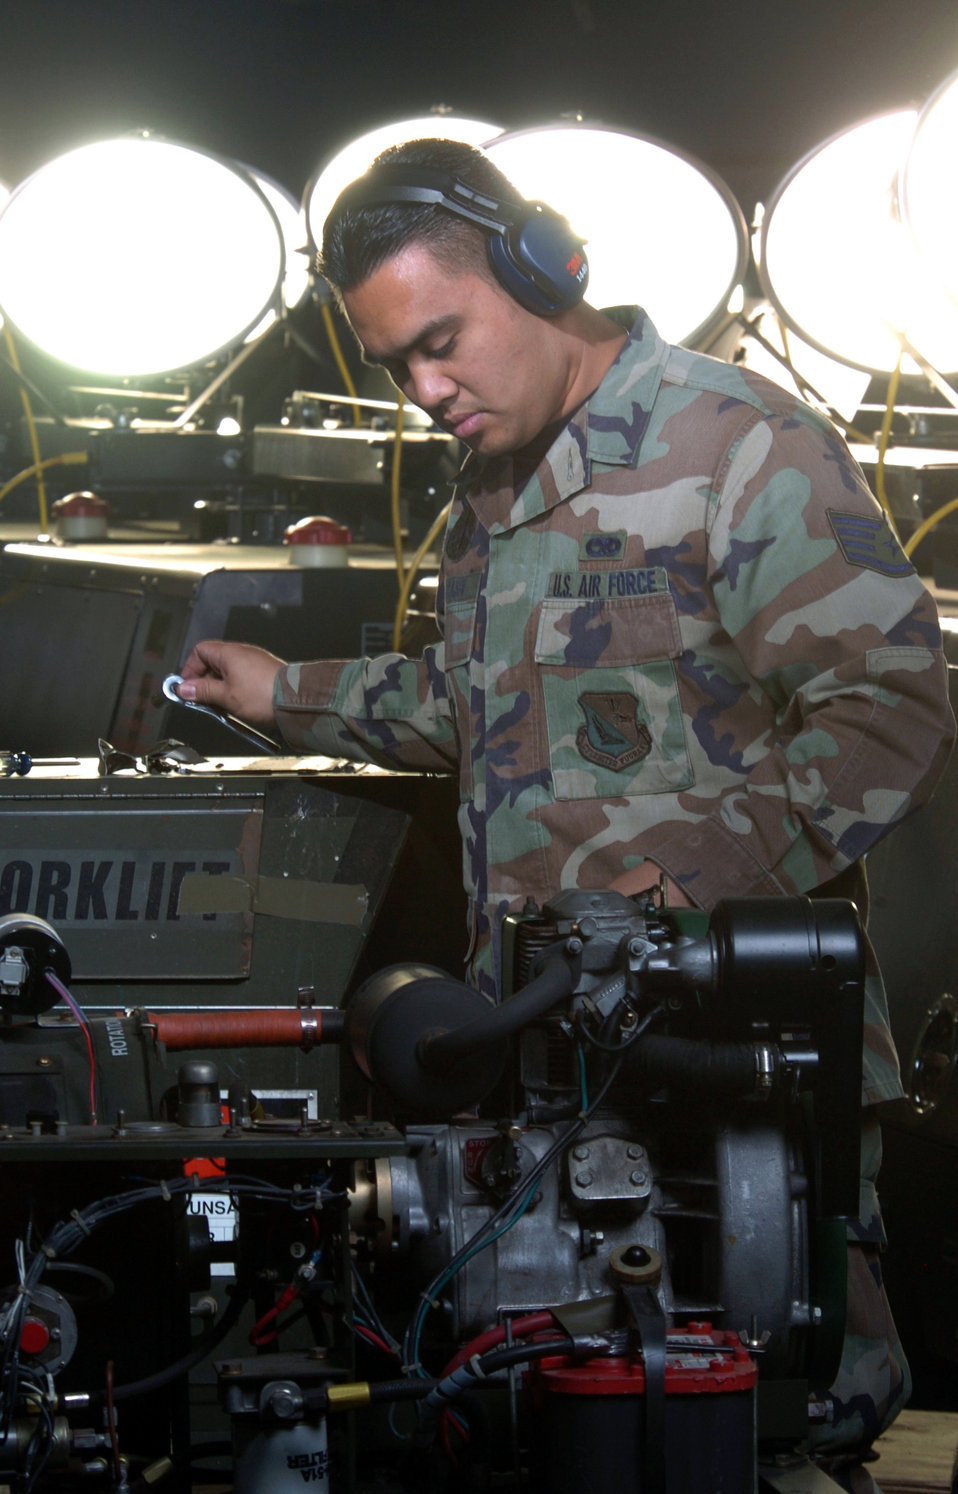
Looking for trouble

YOKOTA AIR BASE, Japan -- Staff Sgt. Gabriel Hayashi looks for cracks and leaks on an air compressor. The mission of the 374th Maintenance Squadron Airmen is to inspect, service and repair assigned and in-transit C-130 Hercules aircraft here. They also maintain mission-ready aircraft to sustain contingency and peacetime missions throughout the Pacific theater. Sergeant Hayashi is an aerospace generation equipment mechanic with the squadron.